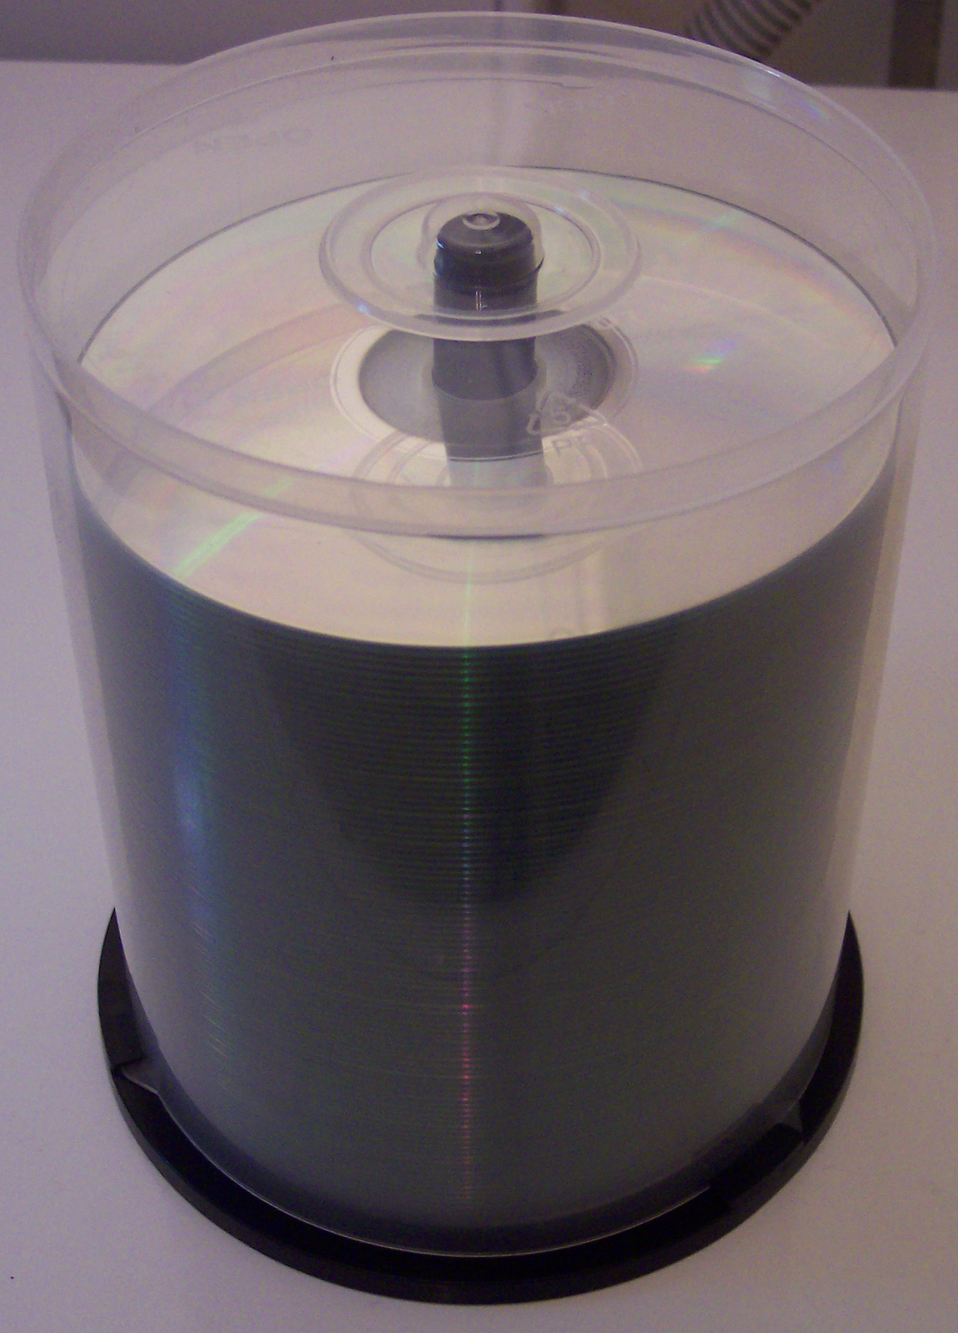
100er geschlossen